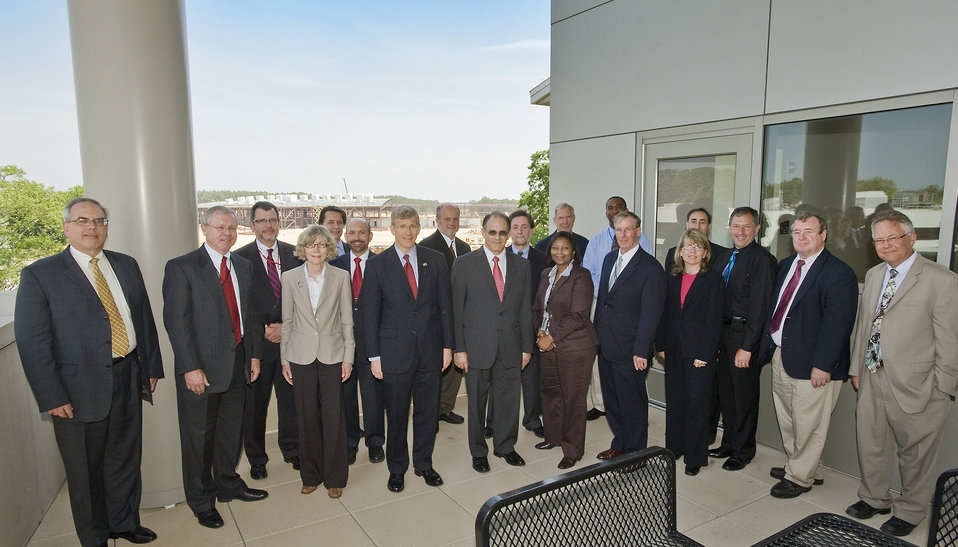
Brookhaven Reactor Visit

On June 1, Doug Pocze and John Malleck of the U.S. Environmental Protection Agency visited Brookhaven Lab to join the celebration marking a major milestone in decommissioning of the BGRR—the safe and successful removal of the graphite pile. This phase, which removed 60,000 activated graphite blocks weighing a total of 700 tons, began in early February and was completed in May. It represents the most difficult part of the decommissioning process.

DOE Deputy Secretary Daniel Poneman and DOE Environmental Management Recovery Act Program Director Cynthia Anderson also were present for the celebration. The visitors toured the BGRR to see the remotely operated equipment and controls used for graphite removal.